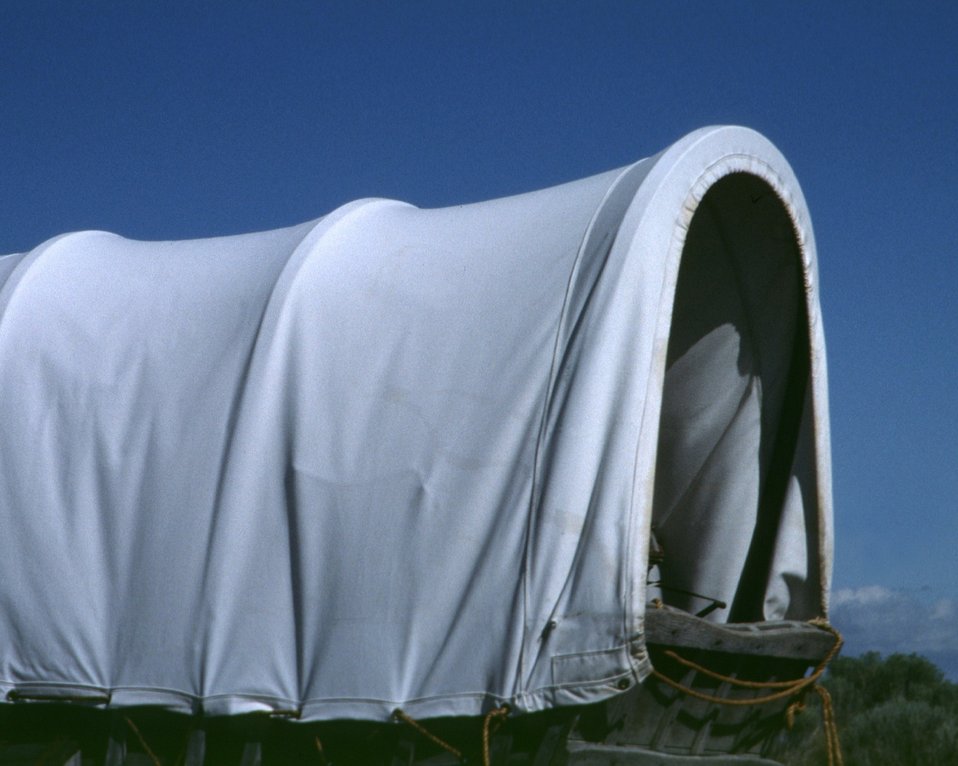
Covered wagon at NHOTIC encampment.